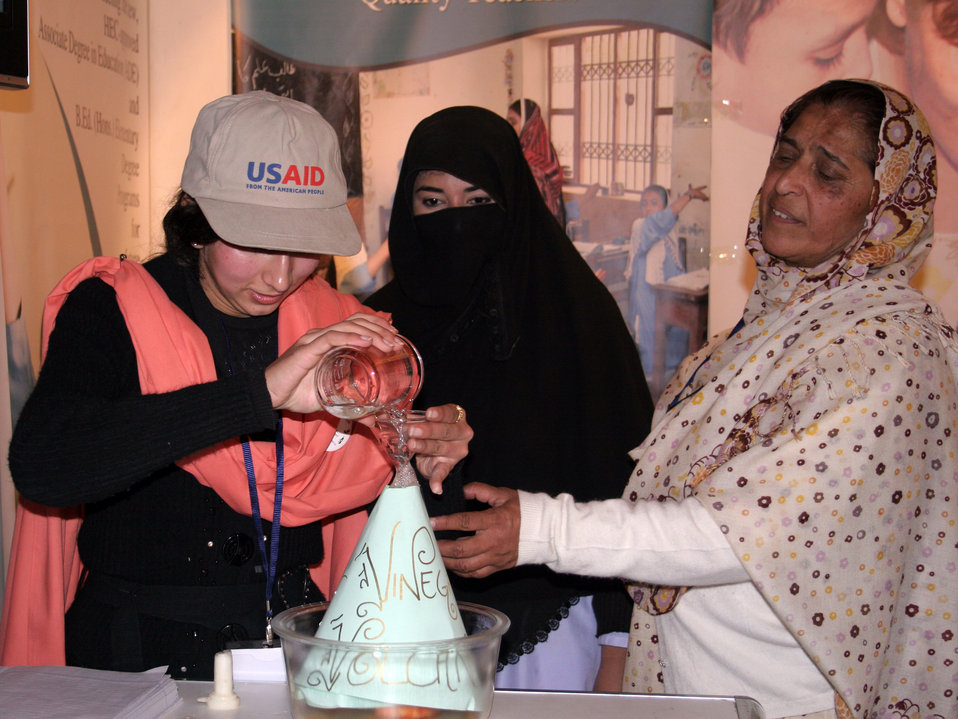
Pakistan Knowledge Festival

Islamabad, January 22, 2011 – A teacher (on the right) helping her students conduct an experiment at the Pakistan Knowledge Festival. USAID’s $75 million Pre-STEP project is working to improve the basic education in Pakistan by strengthening teacher training.